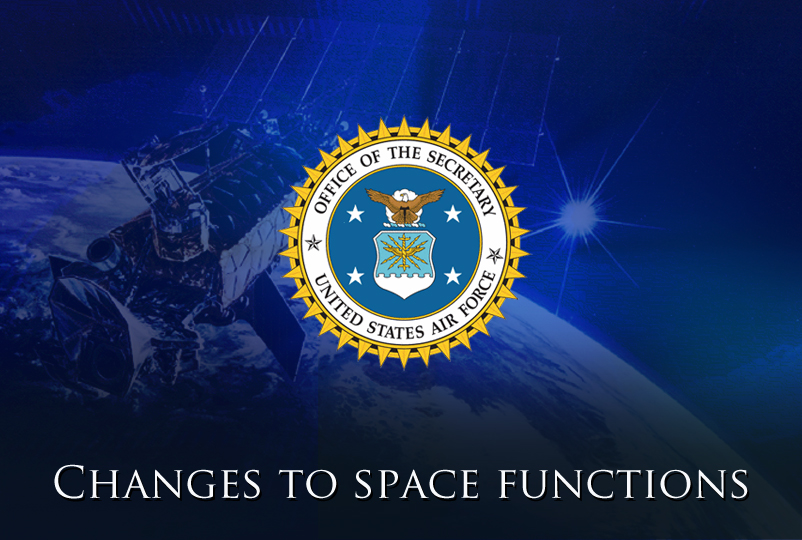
Air Force Week kicks off in New York City